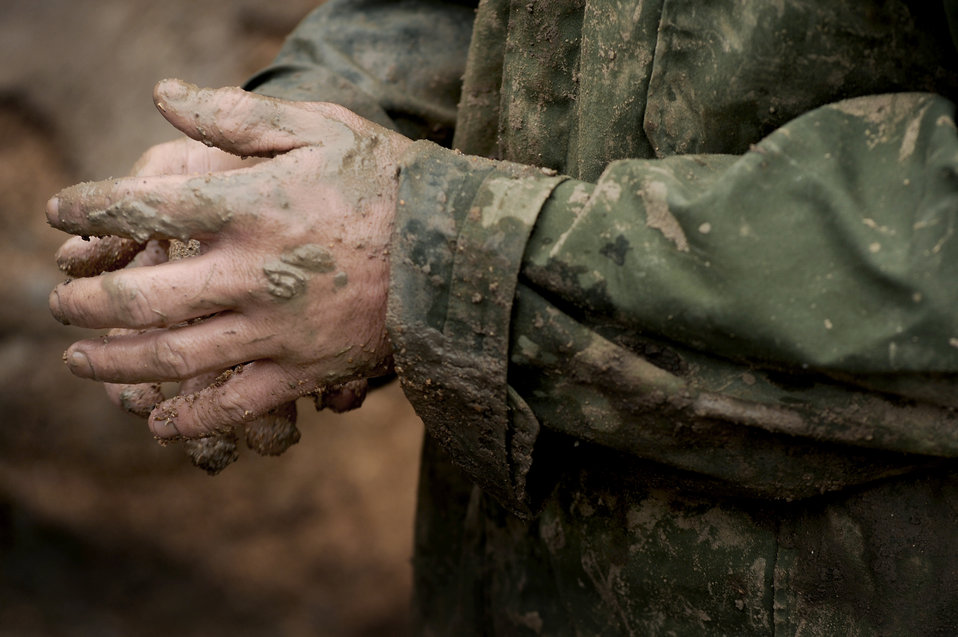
Maintenance specialists

Staff Sgt. Justin England wipes mud from his hand after spending several hours repairing a busted water main March 7, 2011, at Whiteman Air Force Base, Mo. Sergeant England is a maintenance specialist assigned to the 509th Civil Engineer Squadron.